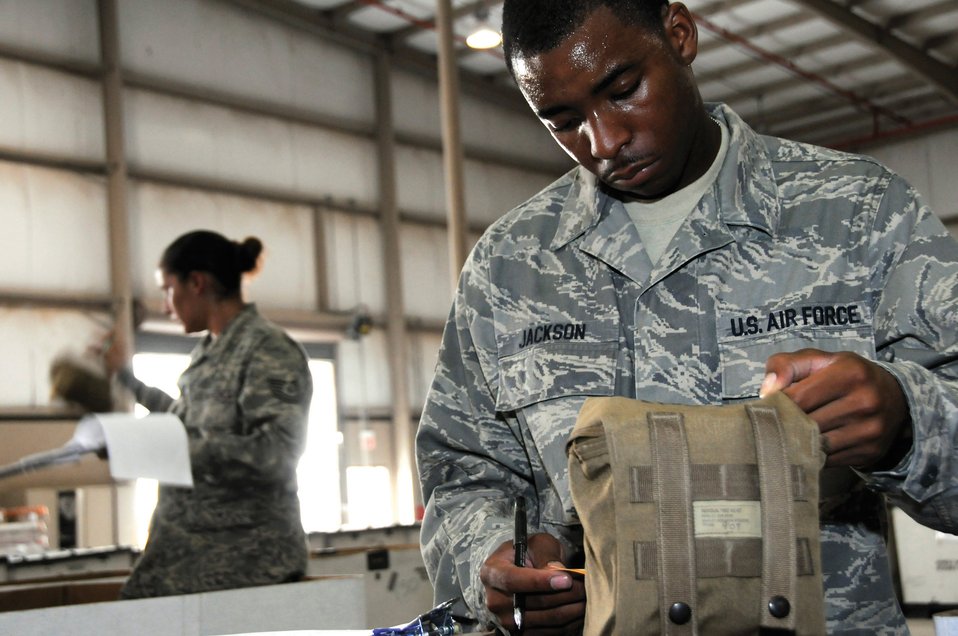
Small group takes small packages, makes huge impact

Airman 1st Class Demetrius Jackson checks the DD form 1574 against the lot number on the individual first aid kit Aug. 19. Airman Jackson and Tech. Sgt. Magdalena Winfield, 379th Expeditionary Logistics Readiness Squadron, are a step in the process of recertifying the first aid kits so they may be put back into circulation, saving lives of airmen in the Central Command area of responsibility. Airman Jackson is assigned to the 379th ELRS, a native of New Orleans, is deployed to Southwest Asia, from Holloman Air Force Base, N.M.